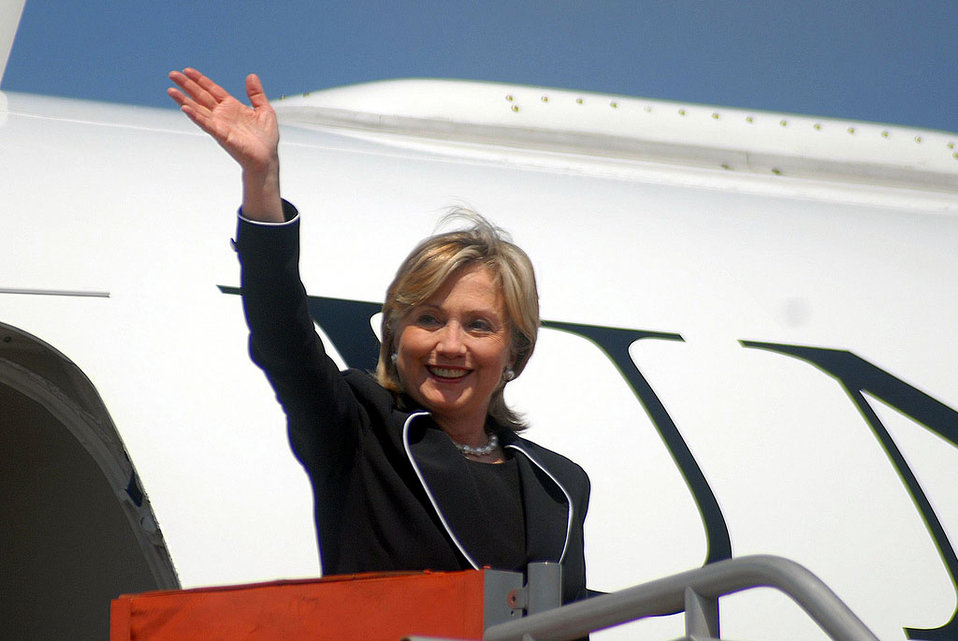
Secretary Clinton Arrives in Guatemala

U.S. Secretary of State Hillary Rodham Clinton arrives in Guatemala City, Guatemala March 5, 2010.